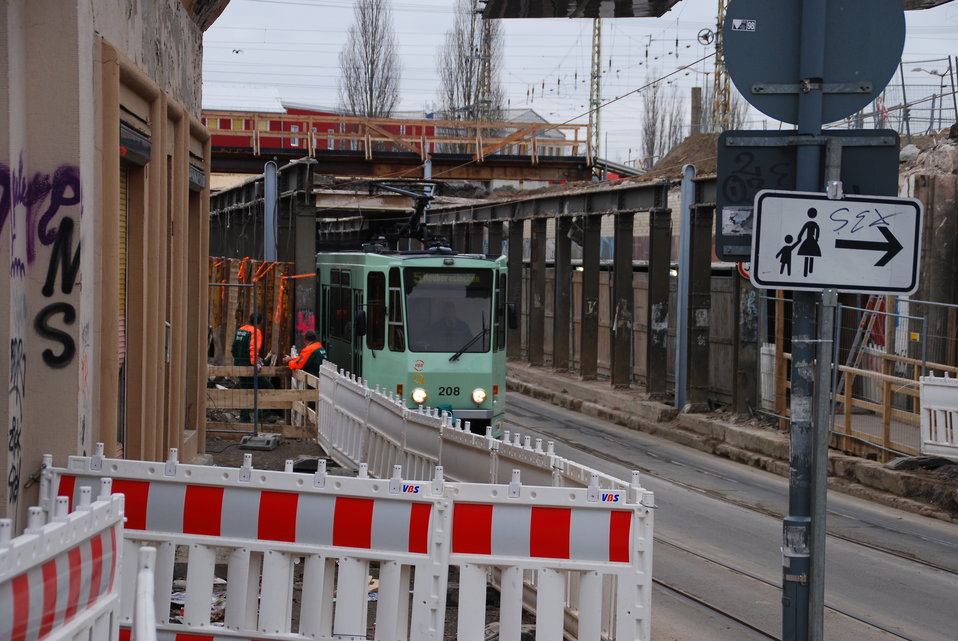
Abriss Bahnhofstunnel Frankfurt (Oder)